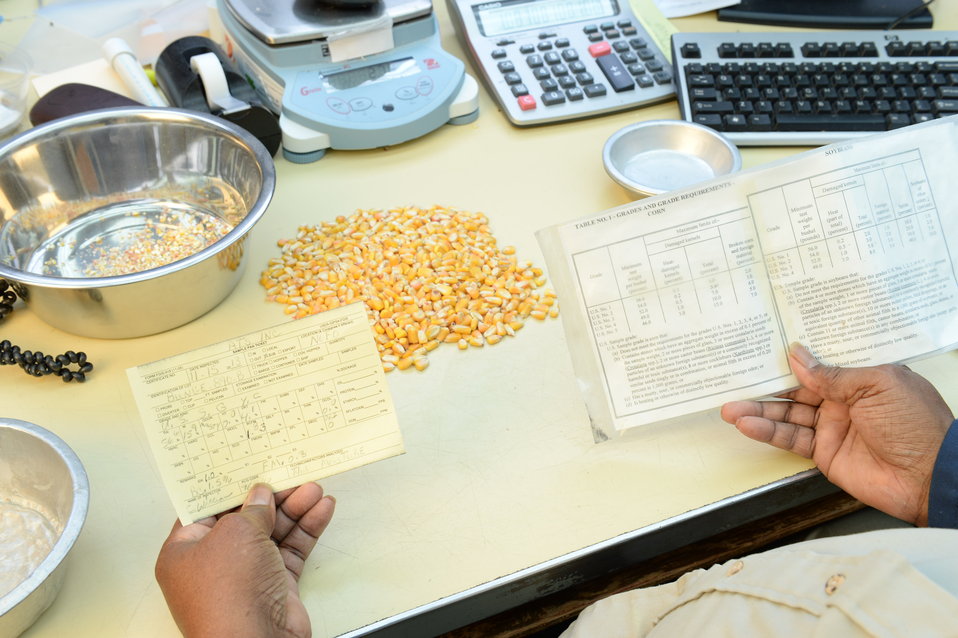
A U.S. Department of Agriculture (USDA) Grain Inspection, Packers and Stockyards Administration (GIPSA) Federal Grain Inspection Service (FGIS) scientist tests corn at the FGIS inspection laboratory in New Orleans, LA on Monday, Nov. 18, 2013.